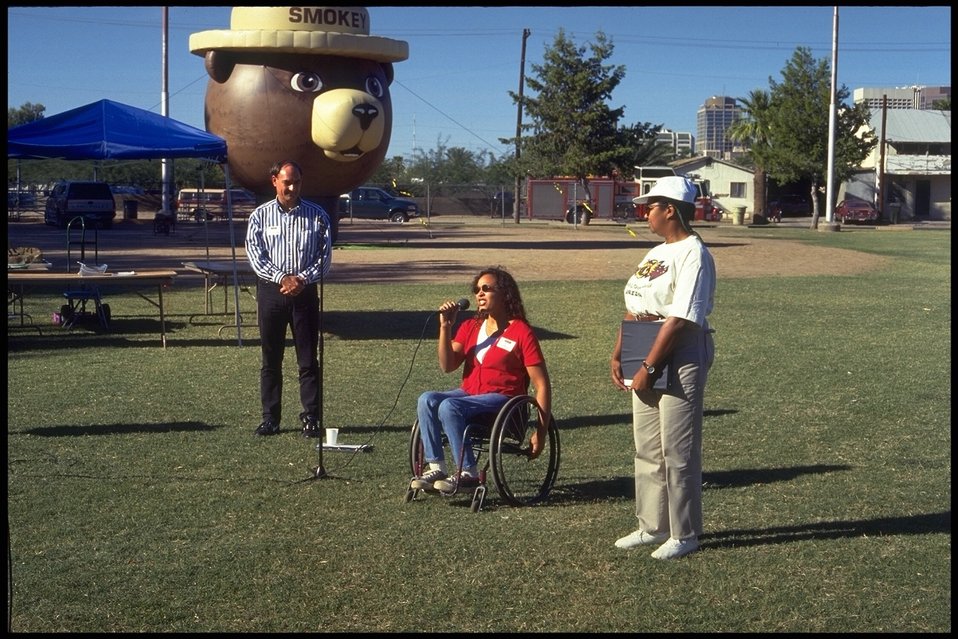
Sherrie Petersen and Denise Meridith, Arizona State Director, greet WOW campers. The WOW program -- Wonderful Outdoor World -- brings the great outdoors to urban youth.